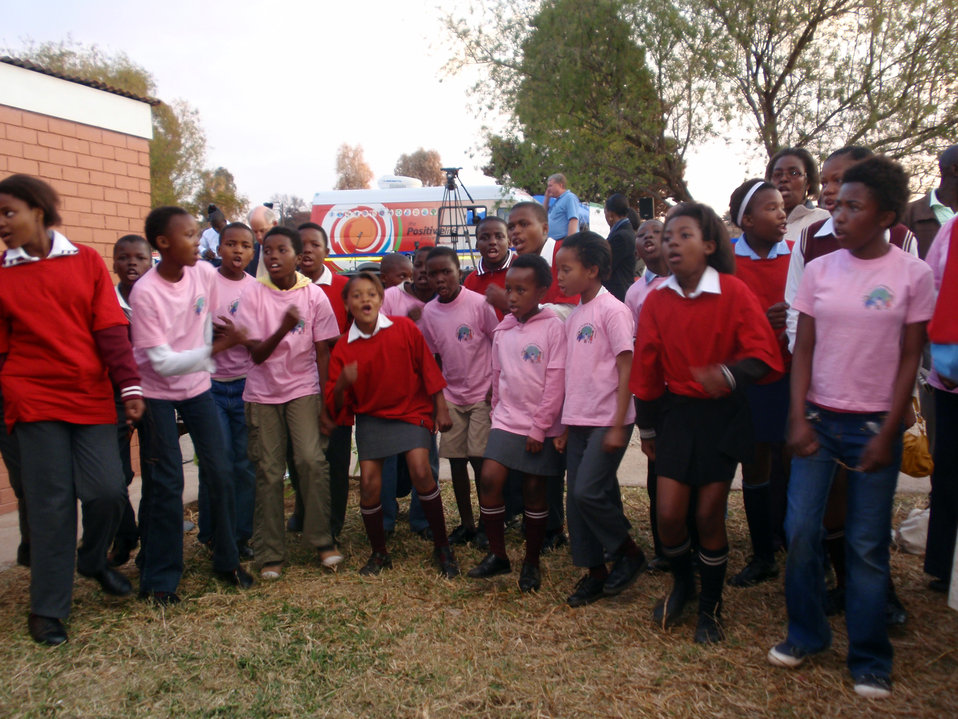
Behind the Scenes: Children Perform at Cullinan Clinic

Children perform during the arrival of U.S. Secretary of State Hillary Rodham Clinton to the Cullinan Clinic in Johannesburg, South Africa August 7, 2009. Secretary Clinton was accompanied by South African Minister of Health Dr. Aaron Motsoaledi.

The clinic represents a partnership and collaboration between the United States and South Africa, through the U.S. President's Emergency Plan for AIDS Relief (PEPFAR) and USAID.